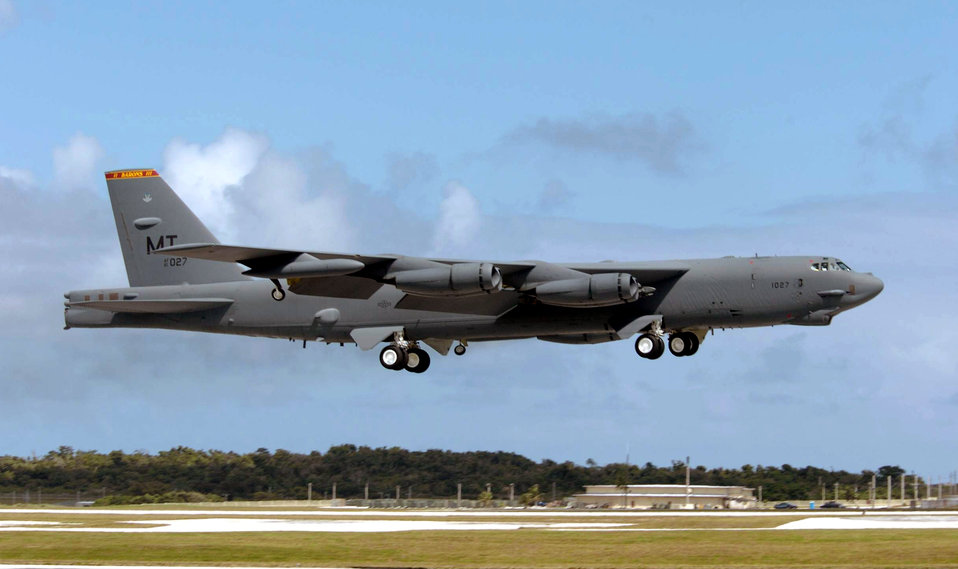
B-52 Stratofortress

FILE PHOTO -- For more than 40 years B-52 Stratofortresses have been the backbone of the manned strategic bomber force for the United States. The B-52 is capable of dropping or launching the widest array of weapons in the U.S. inventory. This includes gravity bombs, cluster bombs, precision guided missiles and joint direct attack munitions. Updated with modern technology the B-52 will be capable of delivering the full complement of joint developed weapons and will continue into the 21st century as an important element of our nation's defenses.